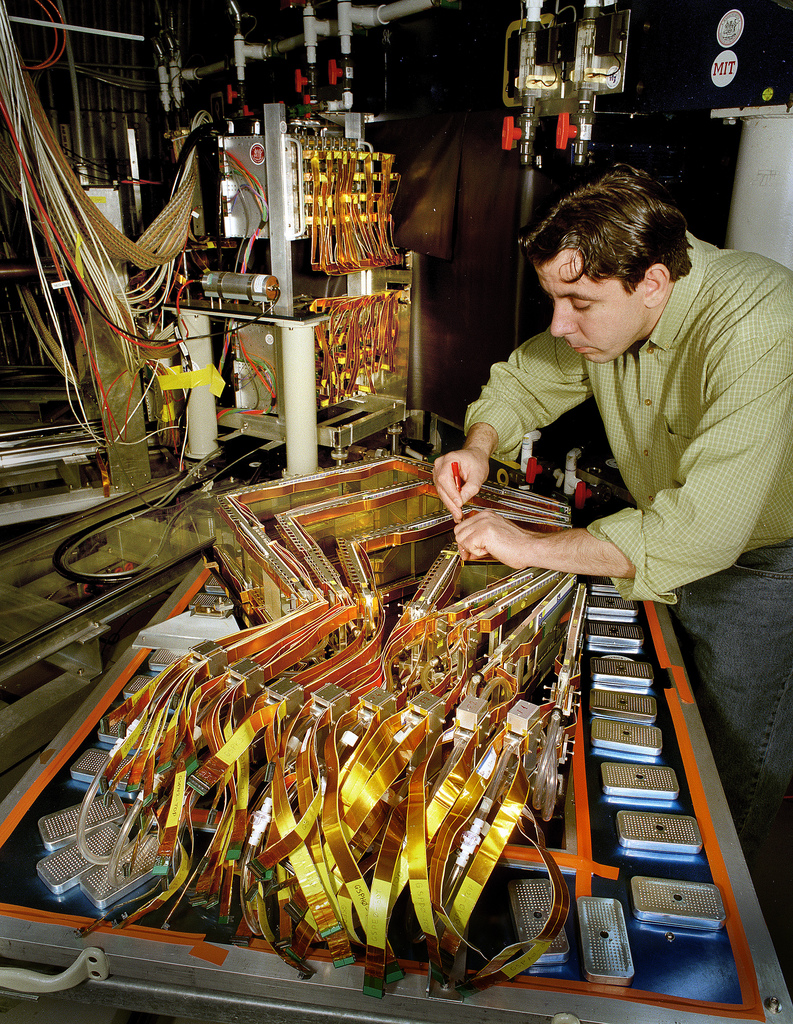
Working on the spectrometer detectors of the PHOBOS detector.

The PHOBOS experiment at Brookhaven National Laboratory's relativistic Heavy Ion Collider is based on the premise that interesting collisions are rare, but when they occur, new physics is readily identified. The PHOBOS detector is designed to examine and analyze a very large number of unselected gold ion collisions. For each collision, the detector gives a global picture of the consequences of the collision and detailed information about a small subset of the nuclear fragments ejected from the high energy-density region.